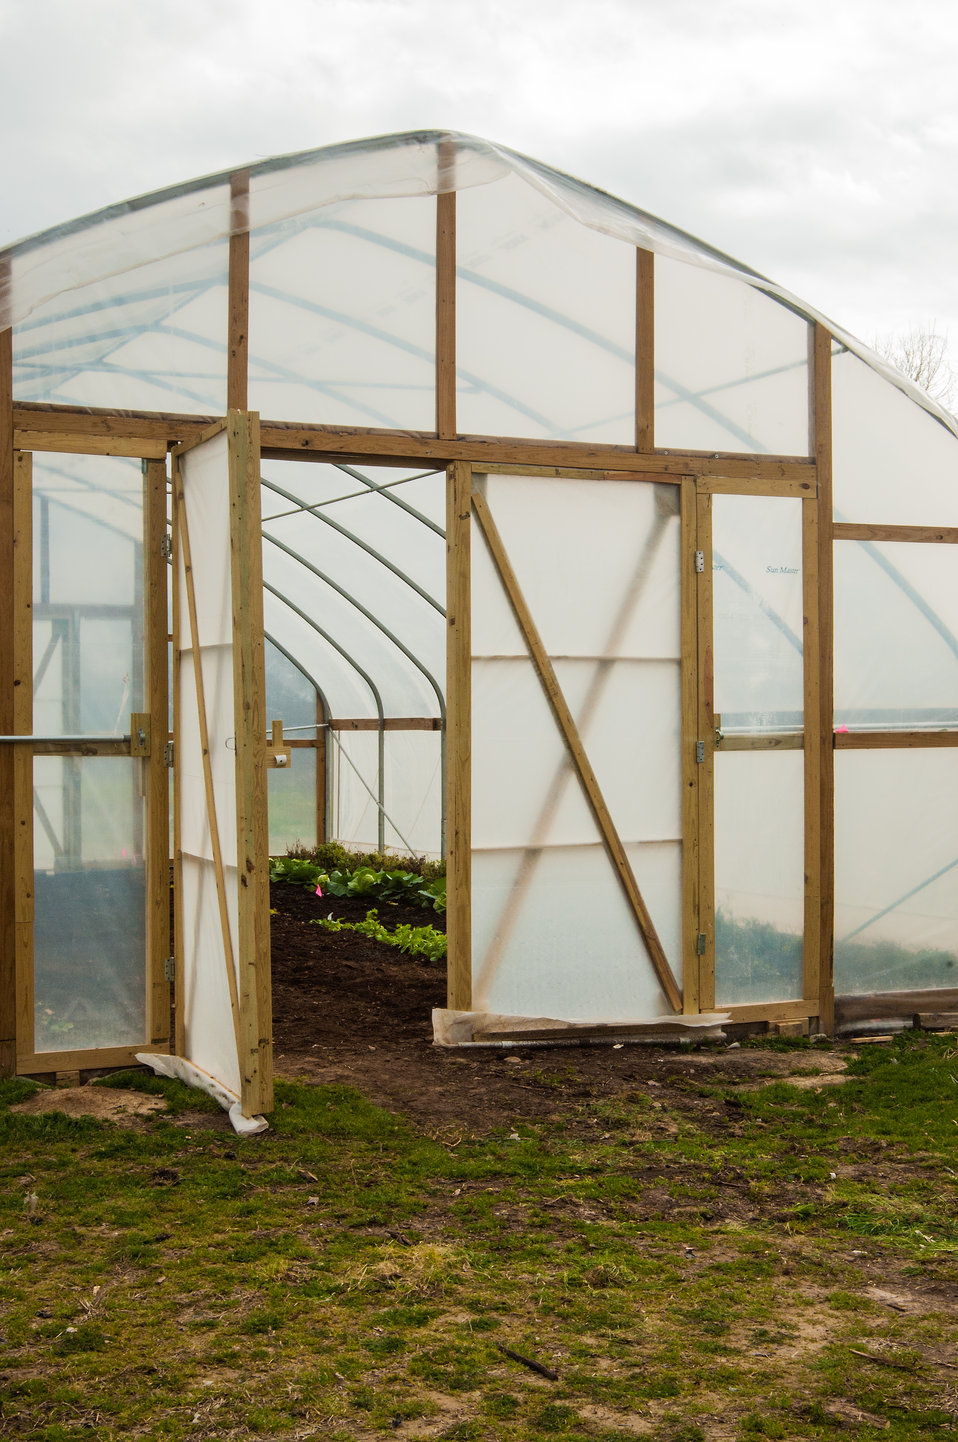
The Arkansas Delta Seeds of Change (ADSOC) Initiative is assisting local specialty crop producers with one of six high tunnel houses at the East Arkansas Enterprise Community, Inc. in Forrest City, AR on Mar. 4, 2013. The technology is being used to assess early/late vegetable market opportunities. The East Arkansas Enterprise Community, (EAEC) Inc.is serving as the fiscal agent for the project. The U.S. Department of Agriculture (USDA) and State agencies including the Strike Force USDA Natural Resources Conservation Service (NRCS), Rural Development (RD), and Farm Service Agency (FSA), and the Cooperative Extension Service are close collaborators with training and outreach efforts to assist producers in achieving USDA’S Good Agriculture Practices Certificate.